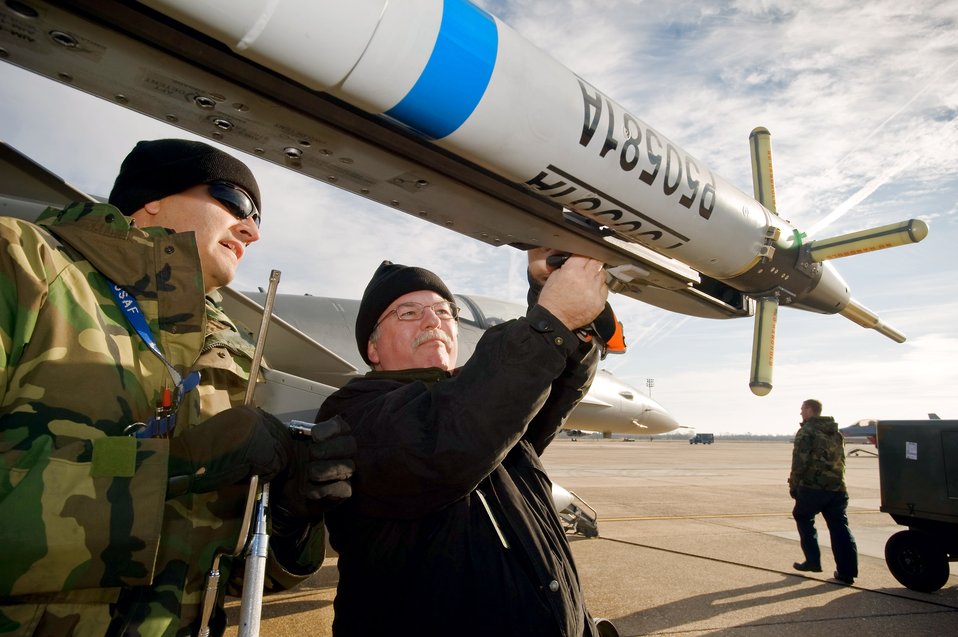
Swap out

Jesse Cummings connects the data feed cable from the air combat maneuvering instrumentation pod to an F-16 Fighting Falcon as Staff Sgt. Richard Martinez stands ready to close the panel Dec. 5 at Green Flag East at Barksdale Air Force Base, La. The ACMI pod transmits real-time 3-D flight data that is superimposed over a moving map providing better situational awareness to the battlefield commander. Mr. Cummings is the site manager for Bering Sea Eccotech. Sergeant Martinez is a 140th Aircraft Maintenance Squadron aircraft weapons specialist with the Colorado Air National Guard from Buckley AFB, Colo.